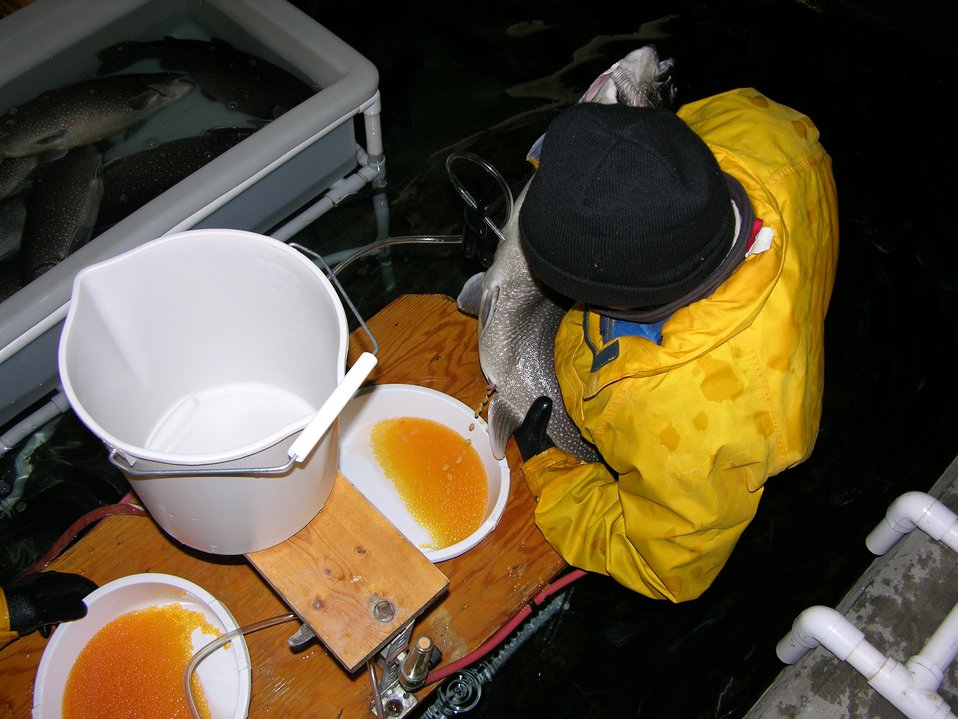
Spawning Lake Trout

Lake trout spawning at Saratoga National Fish Hatchery in Wyoming to restore lake trout in the Great Lakes. Saratoga National Fish Hatchery spawns, incubates, treats, packages and ships the requested number of eggs to partner hatcheries in Michigan in accordance with the Lake Trout Restoration Plan.